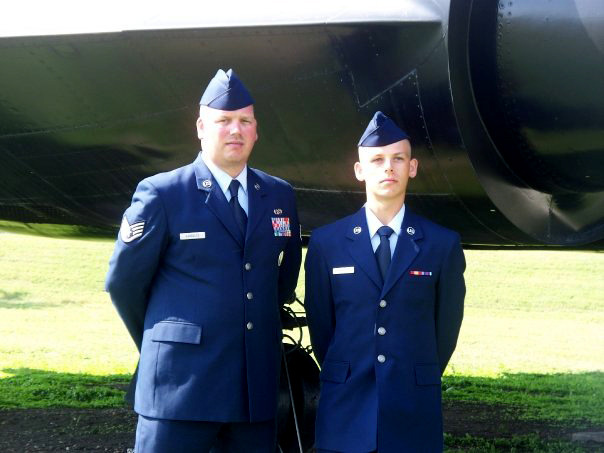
Bob Garrelts from the Lacrosse District has 19 combined years of service between the Army National Guard and the Air Force National Guard. The picture is of him and his son who is Active Duty Air Force. He was honored with the Thomas E Wortham community Service Award last year.